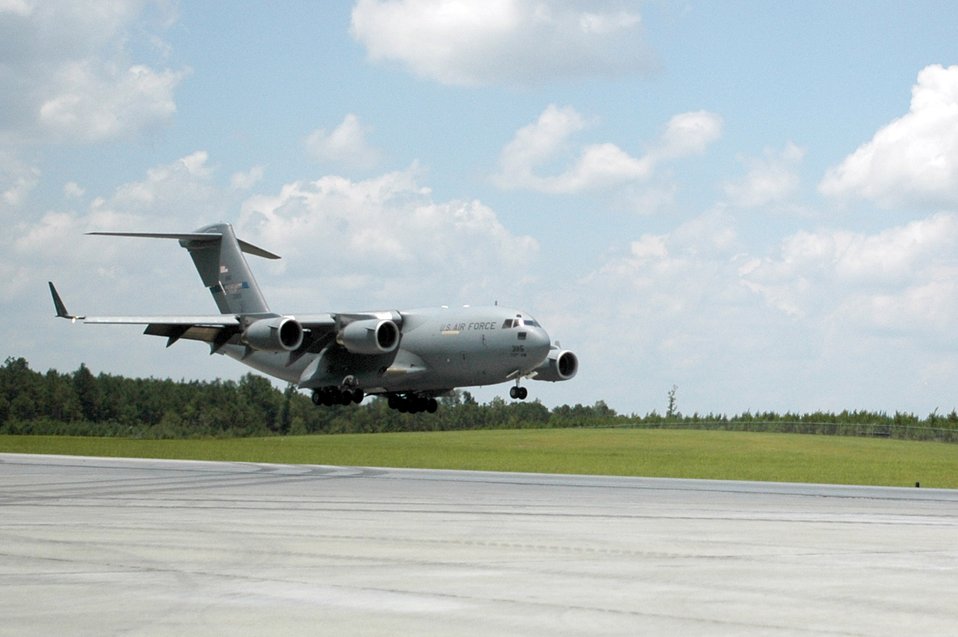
Air Guard opens new combat training runway

A C-17 Globemaster III from the Mississippi Air National Guard's 172nd Airlift Wing lands at the new assault training runway at Camp Shelby, Miss., July 9. The 210-acre Shelby Aux Field is one of only two facilities in the world designed for C-17 short-field landing operations. It was constructed to meet Air Force C-17 training requirements.